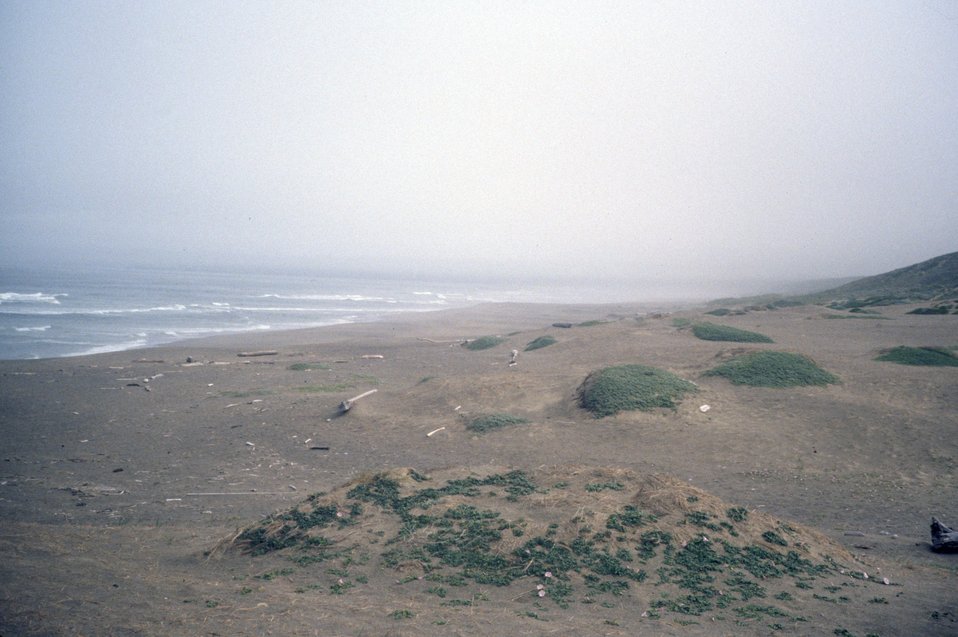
Point Reyes Great Beach. A misty foggy day.